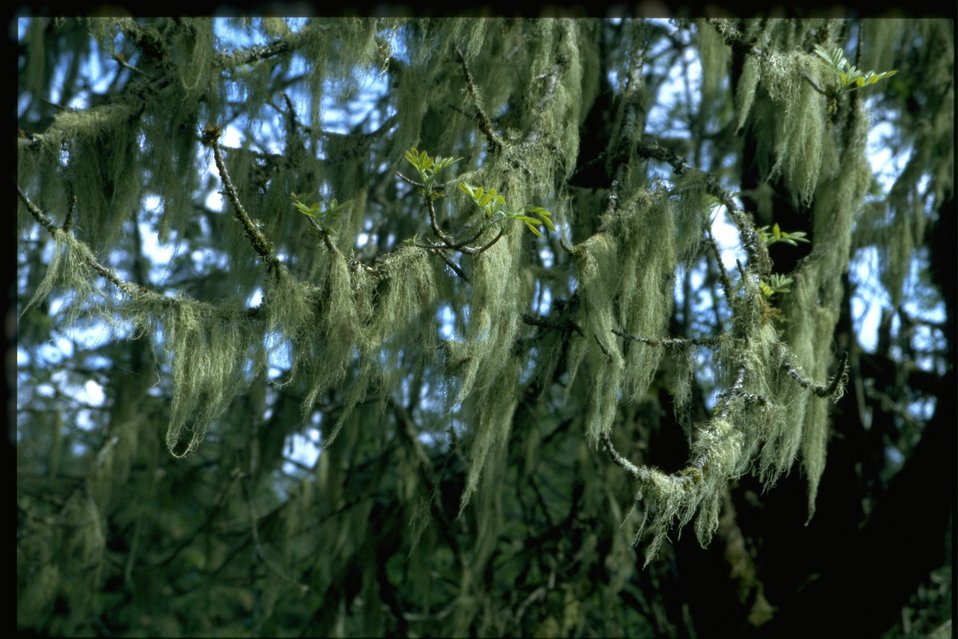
Farshot of Fraxinus latifolia and Alectoria lichen.